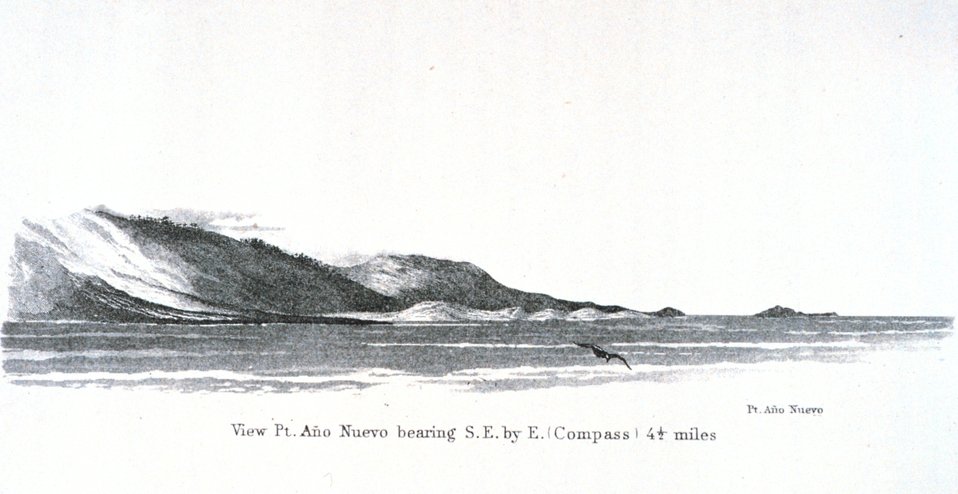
Point Ano Nuevo and Ano Nuevo Island as seen from offshore. This is about 20 miles north of Santa Cruz, California. In: Pacific Coast. Coast Pilot of California, Oregon, and Washington Territory . By George Davidson, 1869. P. 51. Library Call Number VK947.D4 1869.